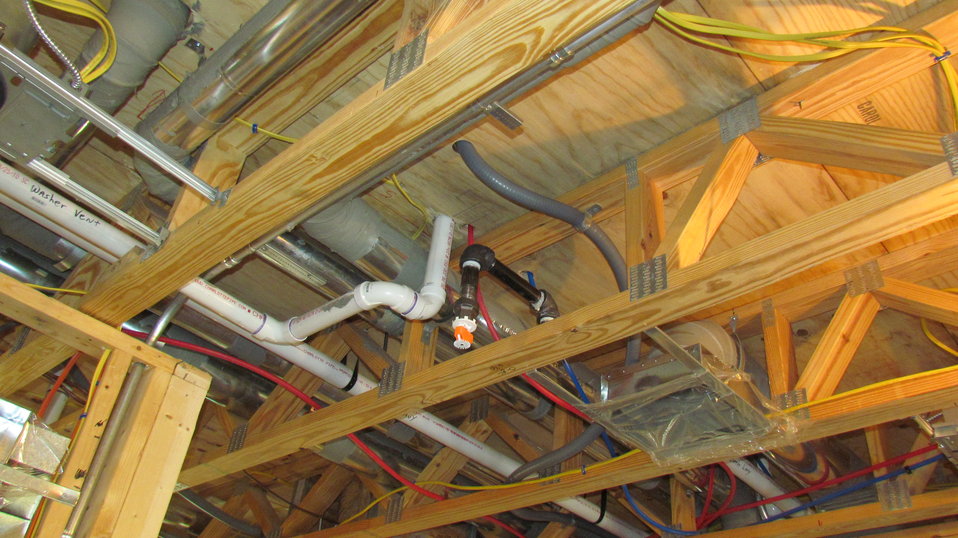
Photo showing one of the fire sprinkler heads installed throughout the facility.